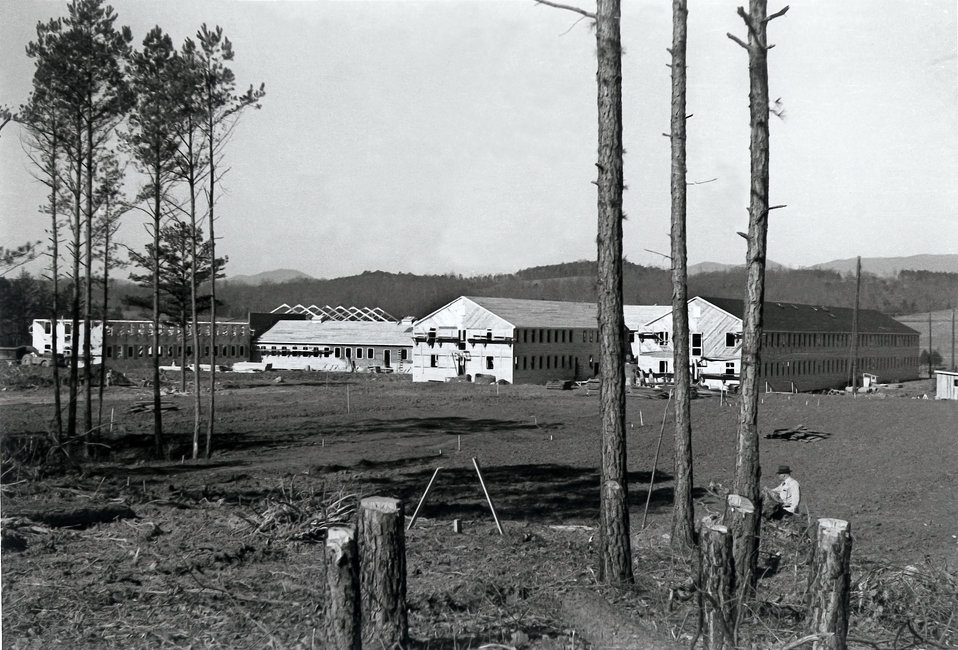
Early Oak Ridge Construction MED Adm Bldg Oak Ridge

Roll 5-6 DOE photo Ed Westcott 2-1- 1943 Oak Ridge Tennessee